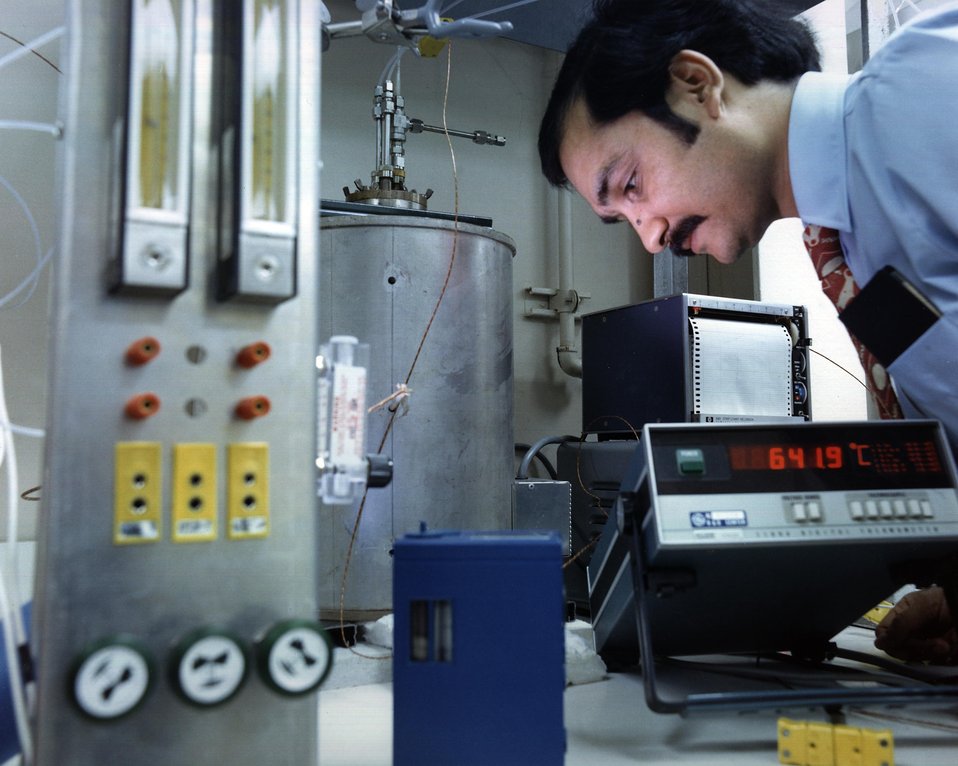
A HOT CORROSION EXPERIMENT BEING CONDUCTED AT GENERAL ELECTRIC'S R&D CENTER.

A NEWER METHOD OF COMMERCIALLY GENERATING ELECTRICITY IS BEING DEVELOPED BY GENERAL ELECTRIC. FUEL CELLS, BATTERY-LIKE GENERATORS, PRODUCE ELECTRICITY BY AN ELECTROCHEMICAL REACTION. UNLIKE THE BATTERY, THE FUEL CELL HAS A CONSTANT SOURCE OF FUEL. IN THIS PROGRAM, G.E. IS PLANNING TO USE GASIFIED COAL TO POWER THE CELLS. THIS HYDROGEN-RICH FUEL IS FED INTO ONE SIDE OF THE CELL WHILE OXYGEN IS FED INTO THE OTHER. THIS CREATES A NEGATIVE CHARGE AT THE HYDROGEN (ANODE) SIDE AND A POSITIVE CHARGE AT THE OXYGEN (CATHODE) SIDE. THE ATTRACTION OF THESE CHARGES CAUSES THE ELECTRONS TO FLOW THROUGH THE MOLTEN CARBONATE ELECTROLYTE. THIS MOVEMENT OF THE ELECTRONS CREATES THE ELECTRICITY. BECAUSE THE MOLTEN CARBONATE FUEL CELL HAS A HIGH OPERATING TEMPERATURE, IT CREATES EXCESS HEAT WHICH CAN BE USED TO POWER OTHER ELECTRIC GENERATORS.